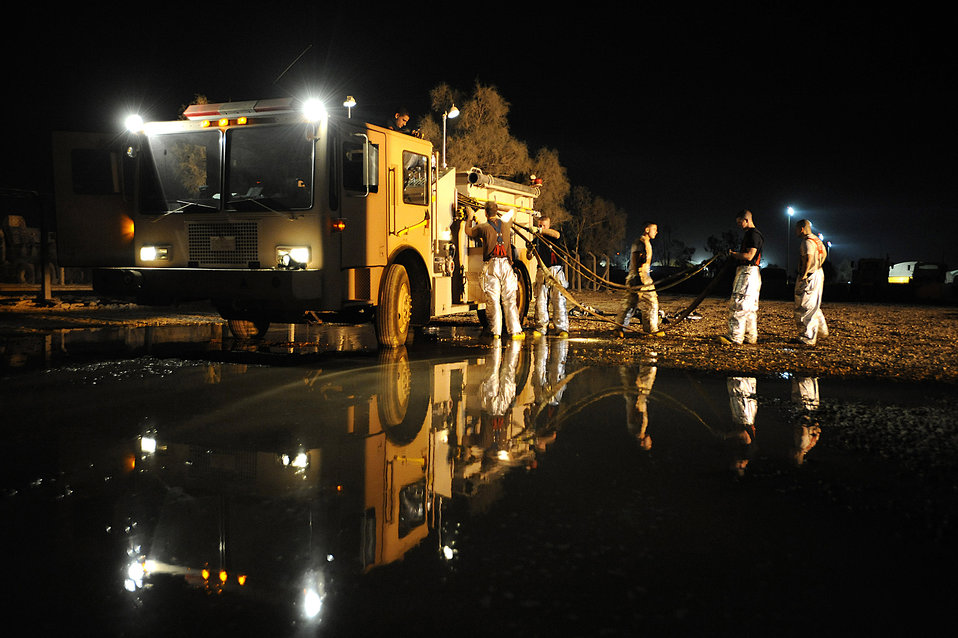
We didn't start the fire

Firefighters load hoses onto a fire engine Oct. 22 at Joint Base Balad, Iraq. The Joint Base Balad Fire Department conducted a controlled burn as part of a live-fire training scenario, giving firefighters experience using hose patterns for interior fires. The fire department is comprised of Airmen and Soldiers.